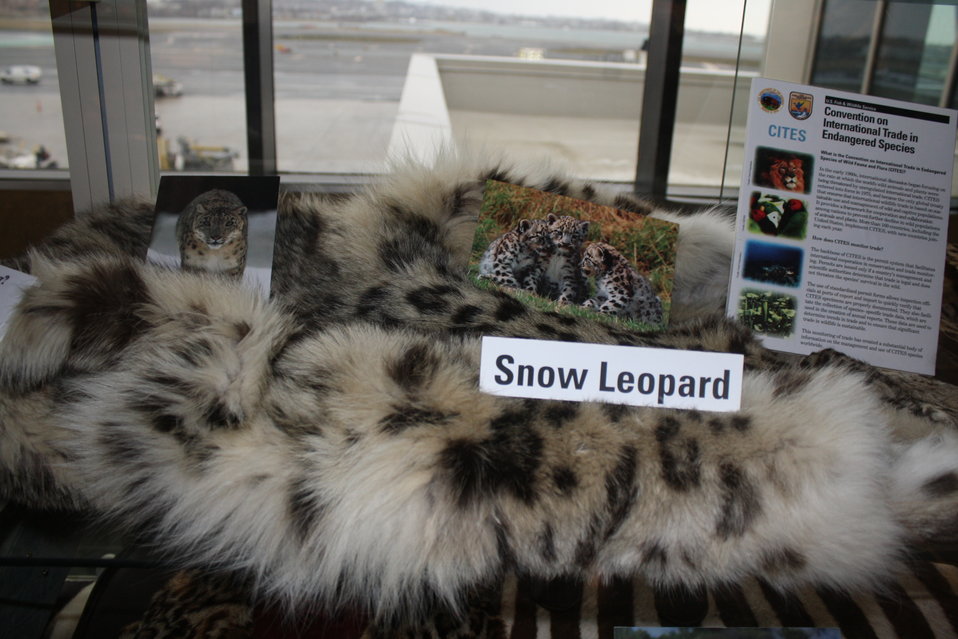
Snow Leopard Skin and Photo